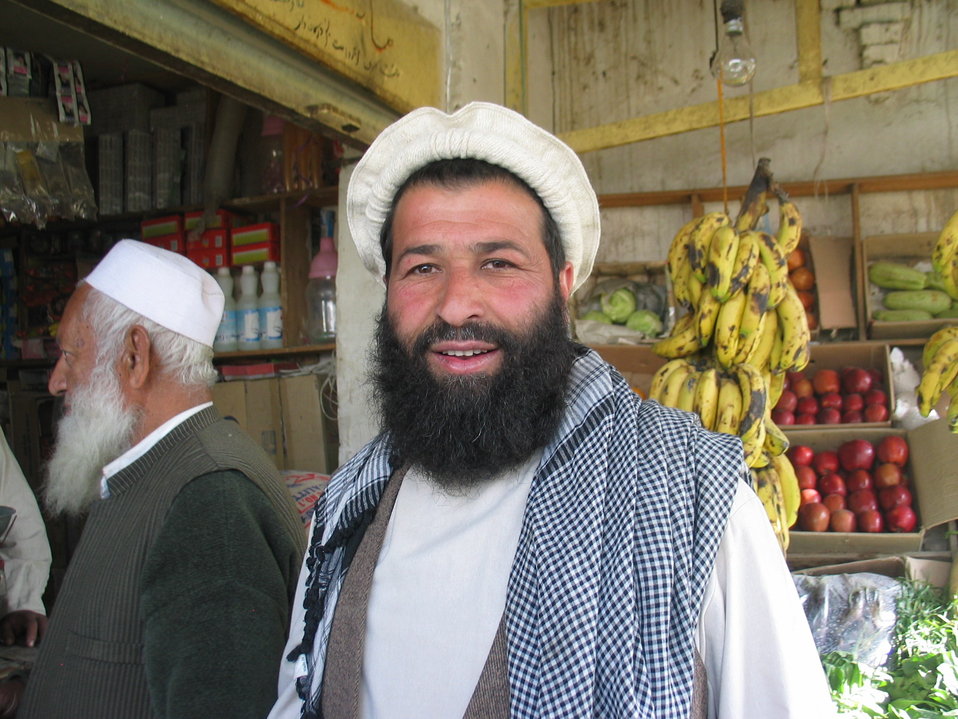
Kabul River Bridge Renovation, December 3, 2010